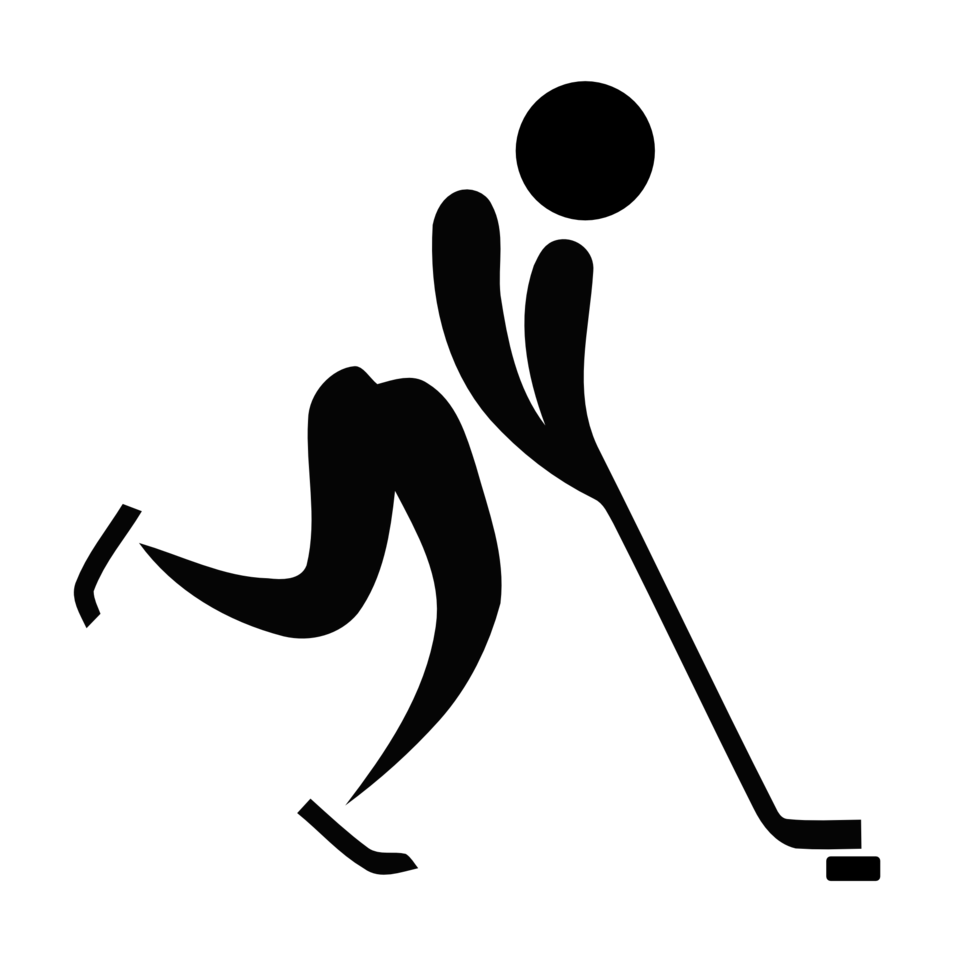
Pictograms of Olympic sports - Ice hockey